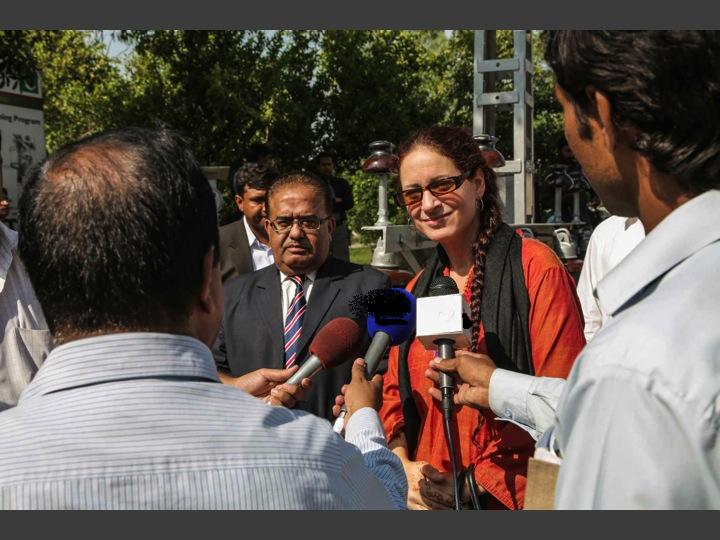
Mr. Ehsan Elahi and Ms. Melissa Knight talking to media at RTC LESCO